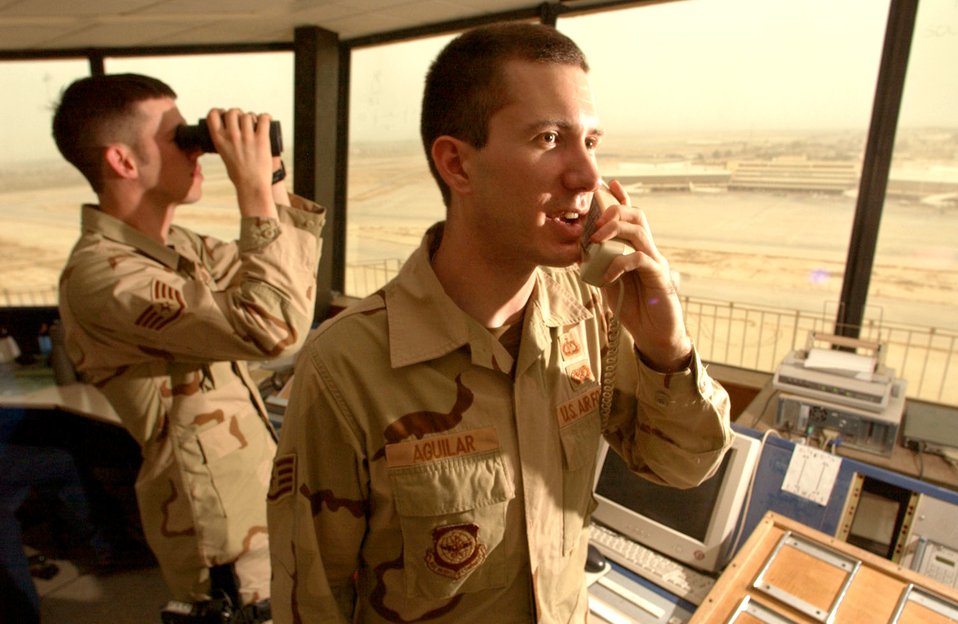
Planes soar thanks to Baghdad's 'tower of power'

BAGHDAD, Iraq -- Staff Sgts. Dale Drake (left) and Charles Aguilar partner with Iraqi air traffic controllers to keep the sky over Baghdad International Airport safe. In June, the 447th Air Expeditionary Group's airfield operations flight Airmen successfully coordinated the safe arrival and departure of more than 9,600 military flights.